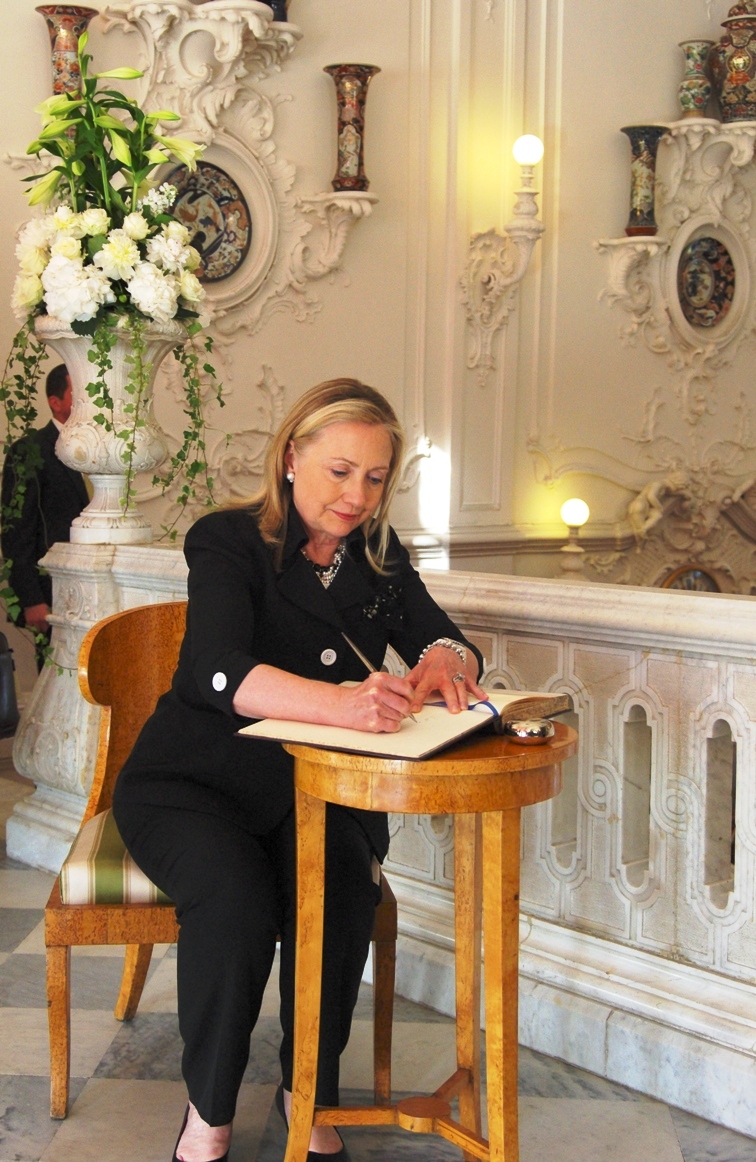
Secretary Clinton Signs the Guest Book

U.S. Secretary of State Hillary Rodham Clinton signs the Catherine Palace Guest Book in St. Petersburg, Russia, on June 29, 2012.